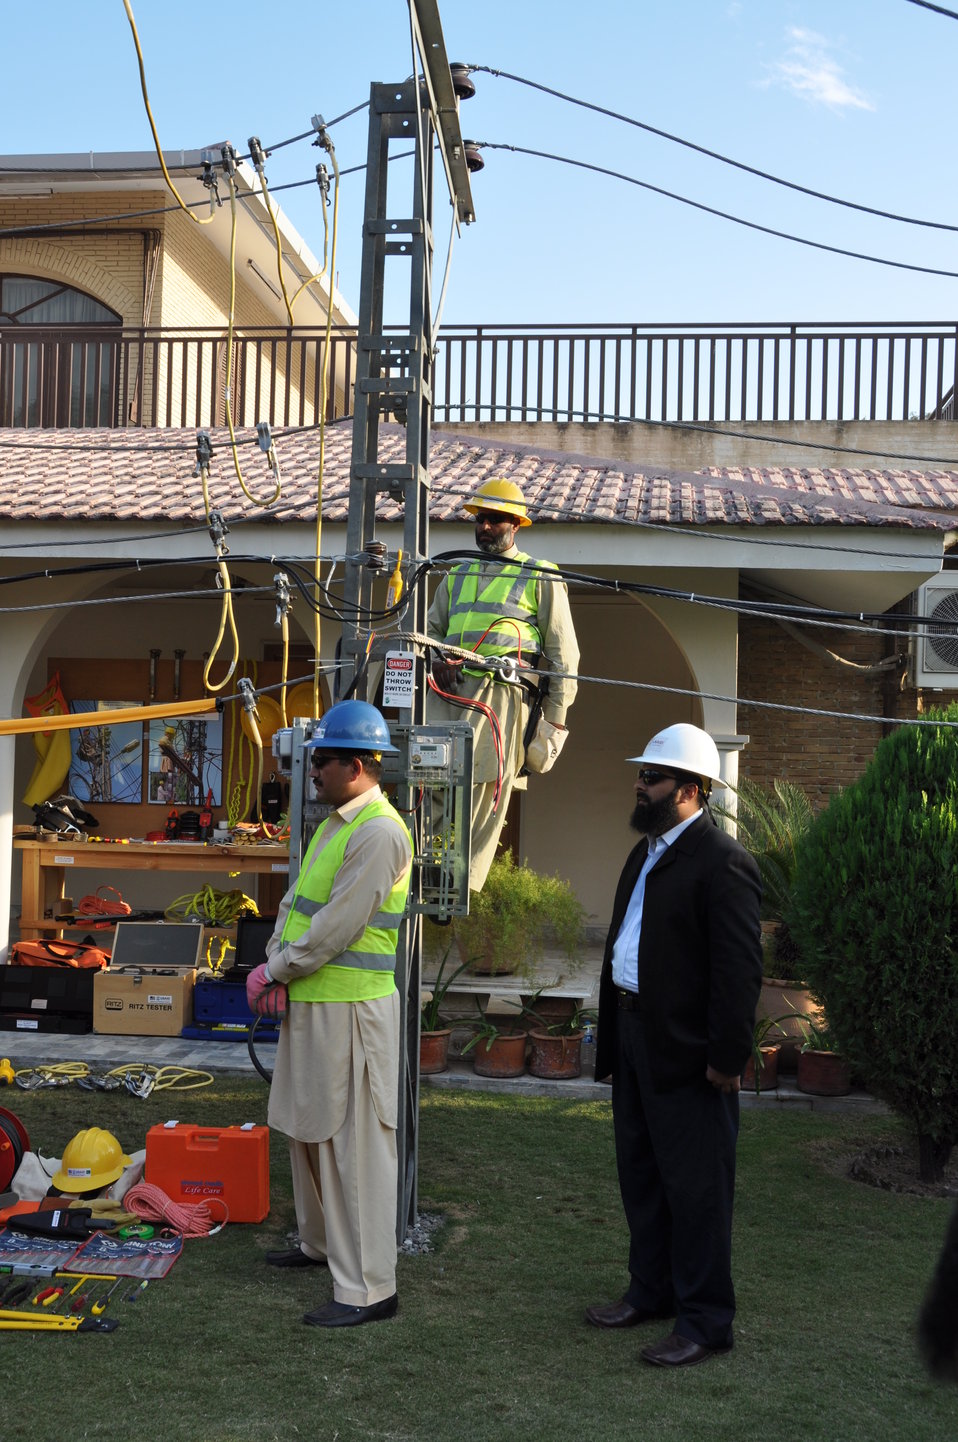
United States Government Strengthens PESCO Field Operations 07